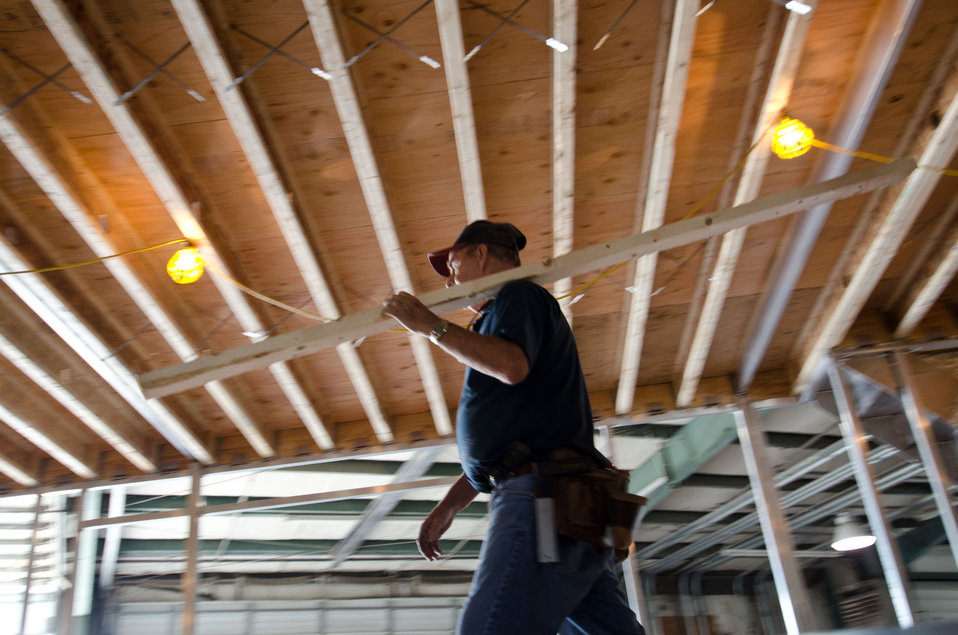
Stardust Industries is using it's expertise in luxury house boats to help retool and redirect Monticello, Kentucky’s houseboat manufacturing industry on Wednesday, July 13, 2011 The houseboat industry has been decimated because of the struggling economy – by using its facilities and manpower to create low-cost housing that is energy efficient. Rural Development obligated $499,000 in Rural Business Enterprise Grant funds to support this unique endeavor. Up until a few years ago, there were several successful houseboat manufacturers in the four-county area surrounding the city of Somerset. Most have now ceased operation or drastically reduced output, which has led to dramatic, long-term job loss. These new energy efficient homes will be constructed in redesigned, refitted houseboat factories using local workers that have been retrained.